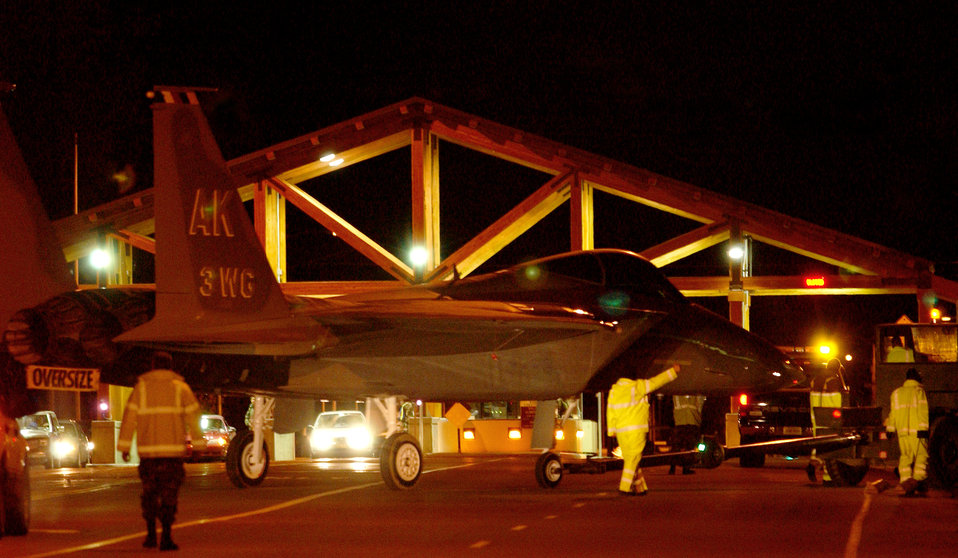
Not-so-static display

ELMENDORF AIR FORCE BASE, Alaska -- An F-15 Eagle is towed toward its stand where it became the first static display to sit outside the main gate here. It was towed across base and down about one mile of a busy highway. With help from the local police department, the highway was shut down for less than an hour for towing of the aircraft.